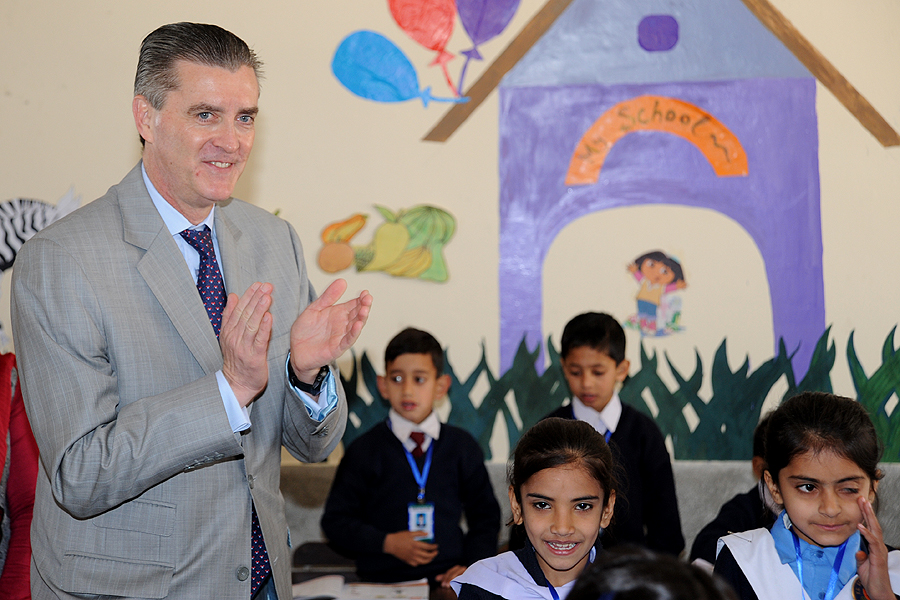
United States and Pakistan Launch the Pakistan Reading Project